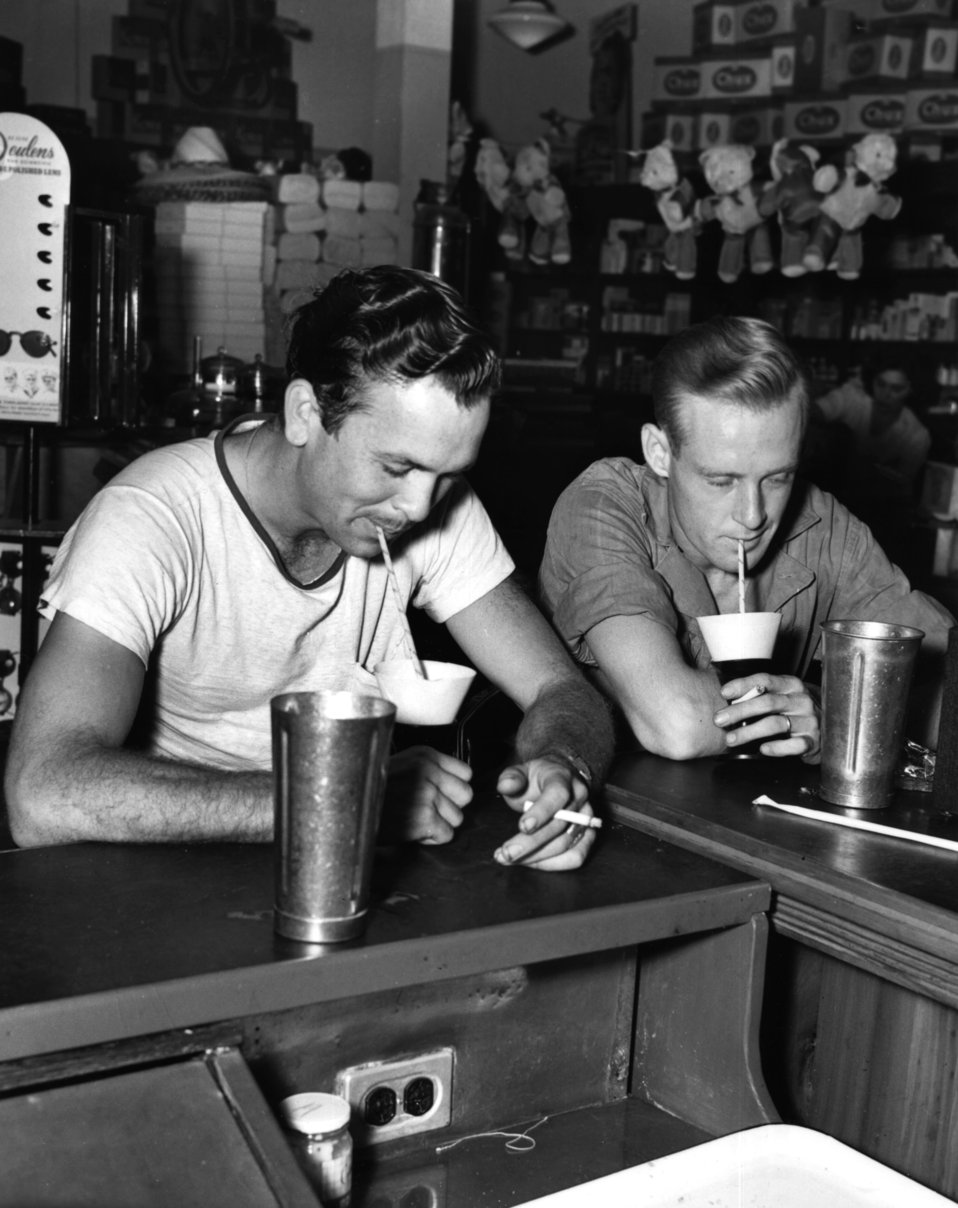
Malt Shop Oak Ridge

pro50 DOE photo Ed Westcott 9-20-1944 Oak Ridge Tennessee